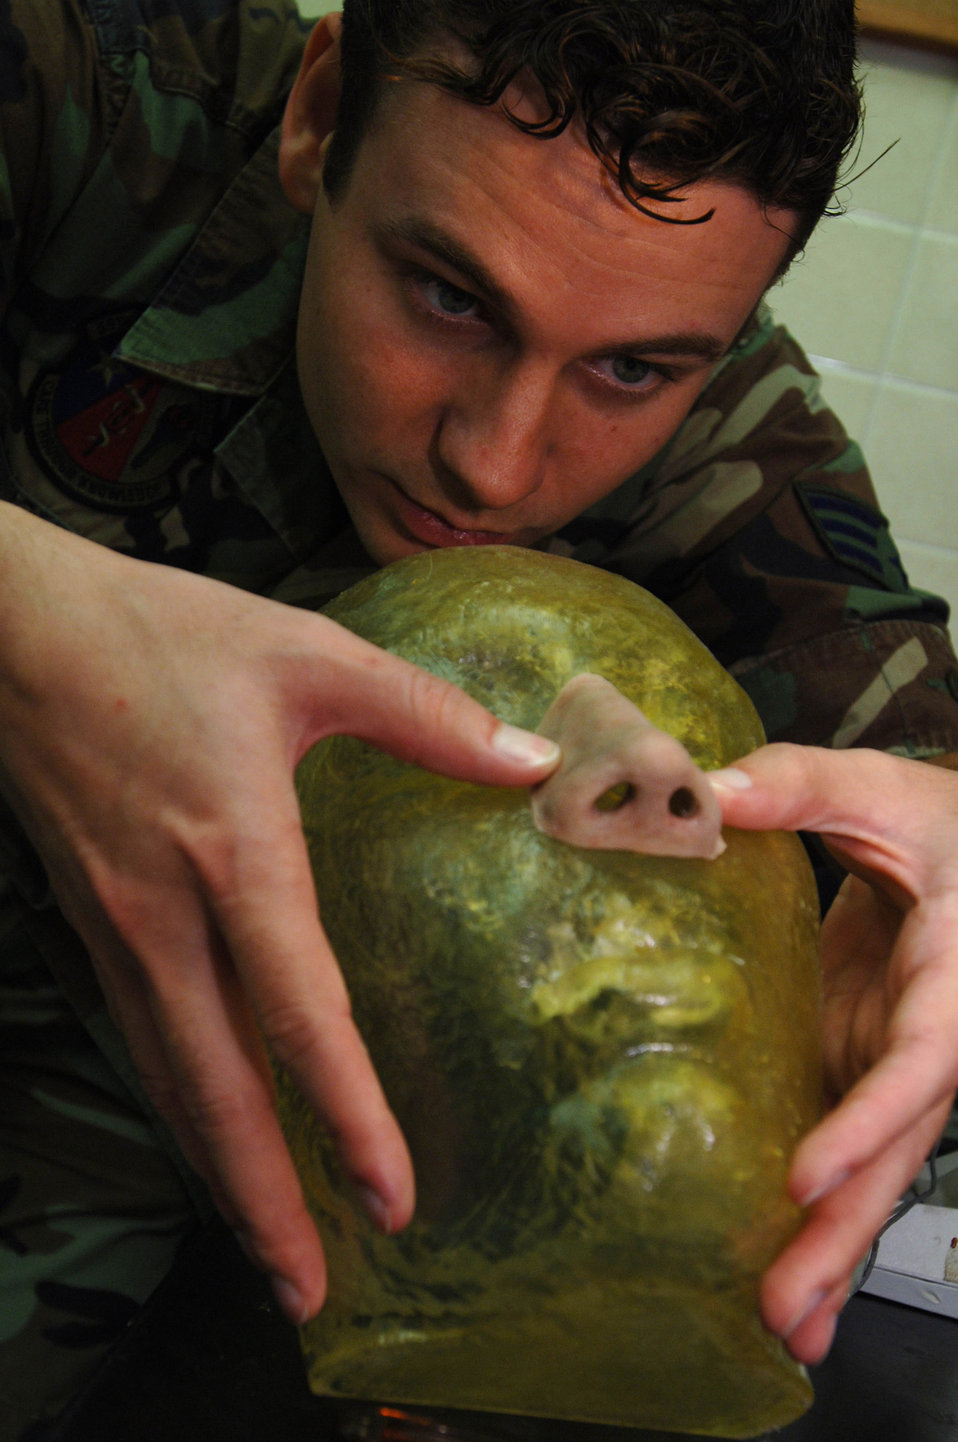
Airman helps injured warriors 'face' the world

Maxillofacial prosthetic technician Senior Airman Justin Jones checks the fit and finish on a nose he is sculpting as part of a patient's reconstructive treatment. Airman Jones is assigned to the 59th Dental Squadron at Lackland Air Force Base, Texas.